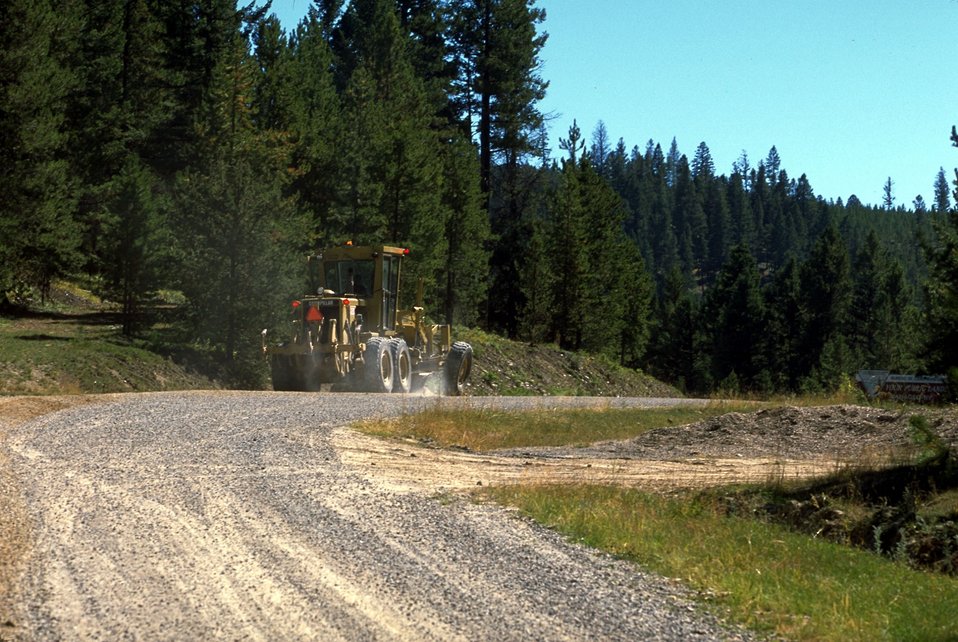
Garnet Back Country Byway--road maintenance work